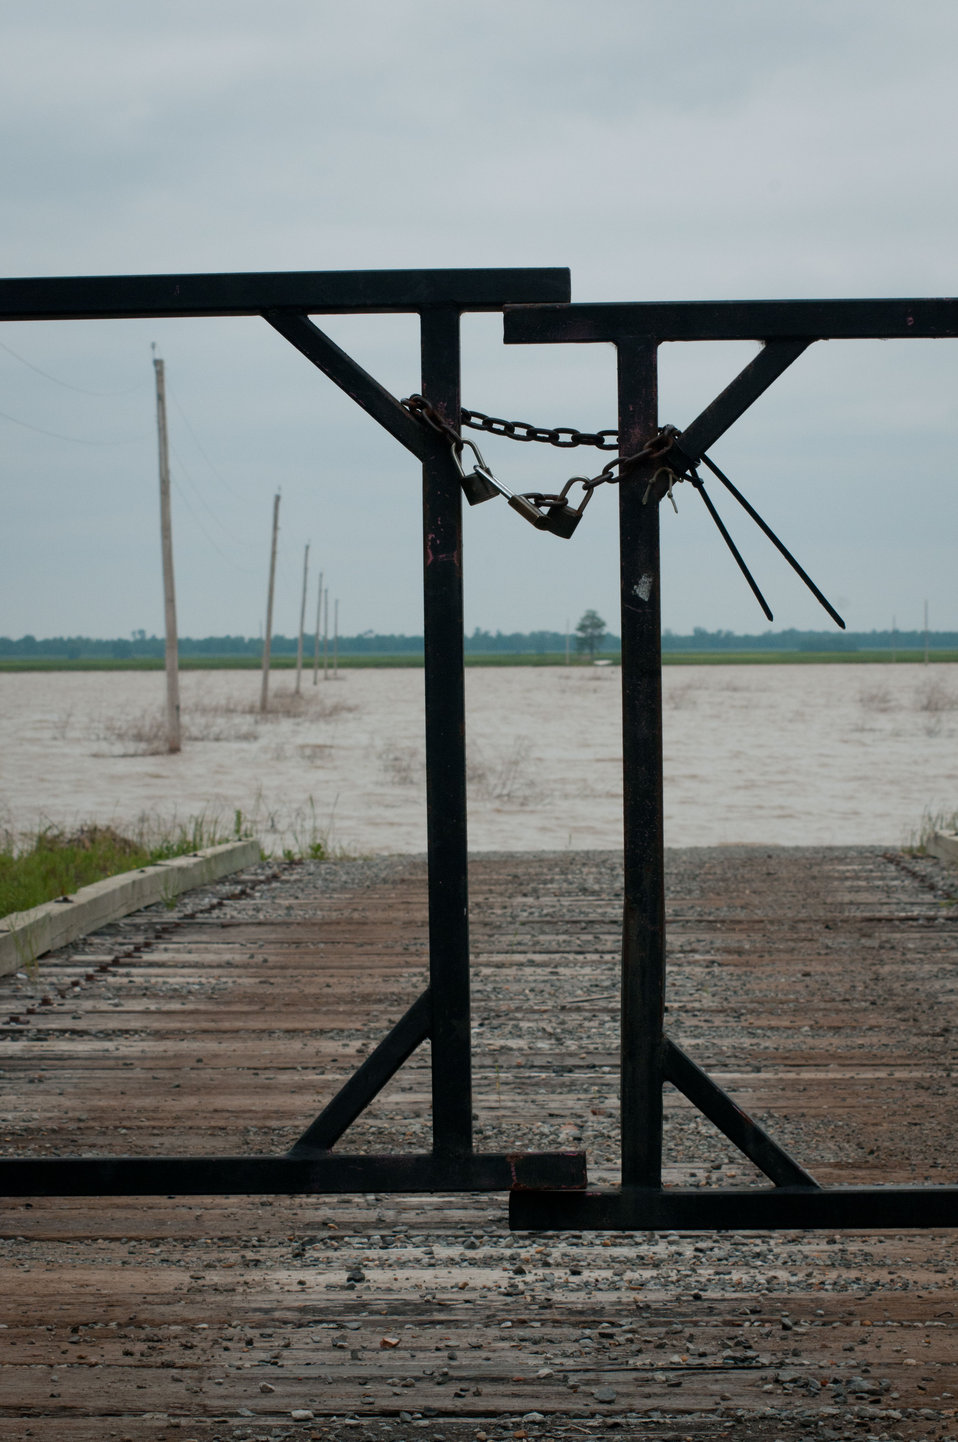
Floods waters from Mississippi River inundated casinos and farms that surround Tunica, MS, on Sunday, May 15. 2011.